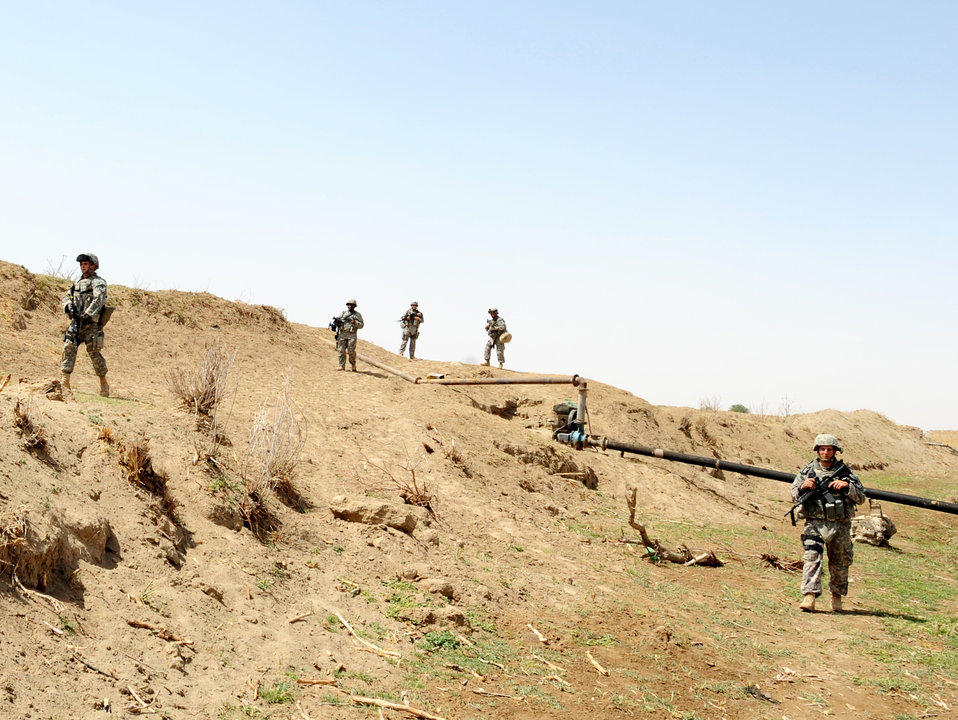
Joint Base Balad security forces Airmen patrol Iraq villages

Air Force members of the 532nd Expeditionary Security Forces Squadron at Joint Base Balad, Iraq, conduct a weapons cache sweep April 9 along the the Tigris River.